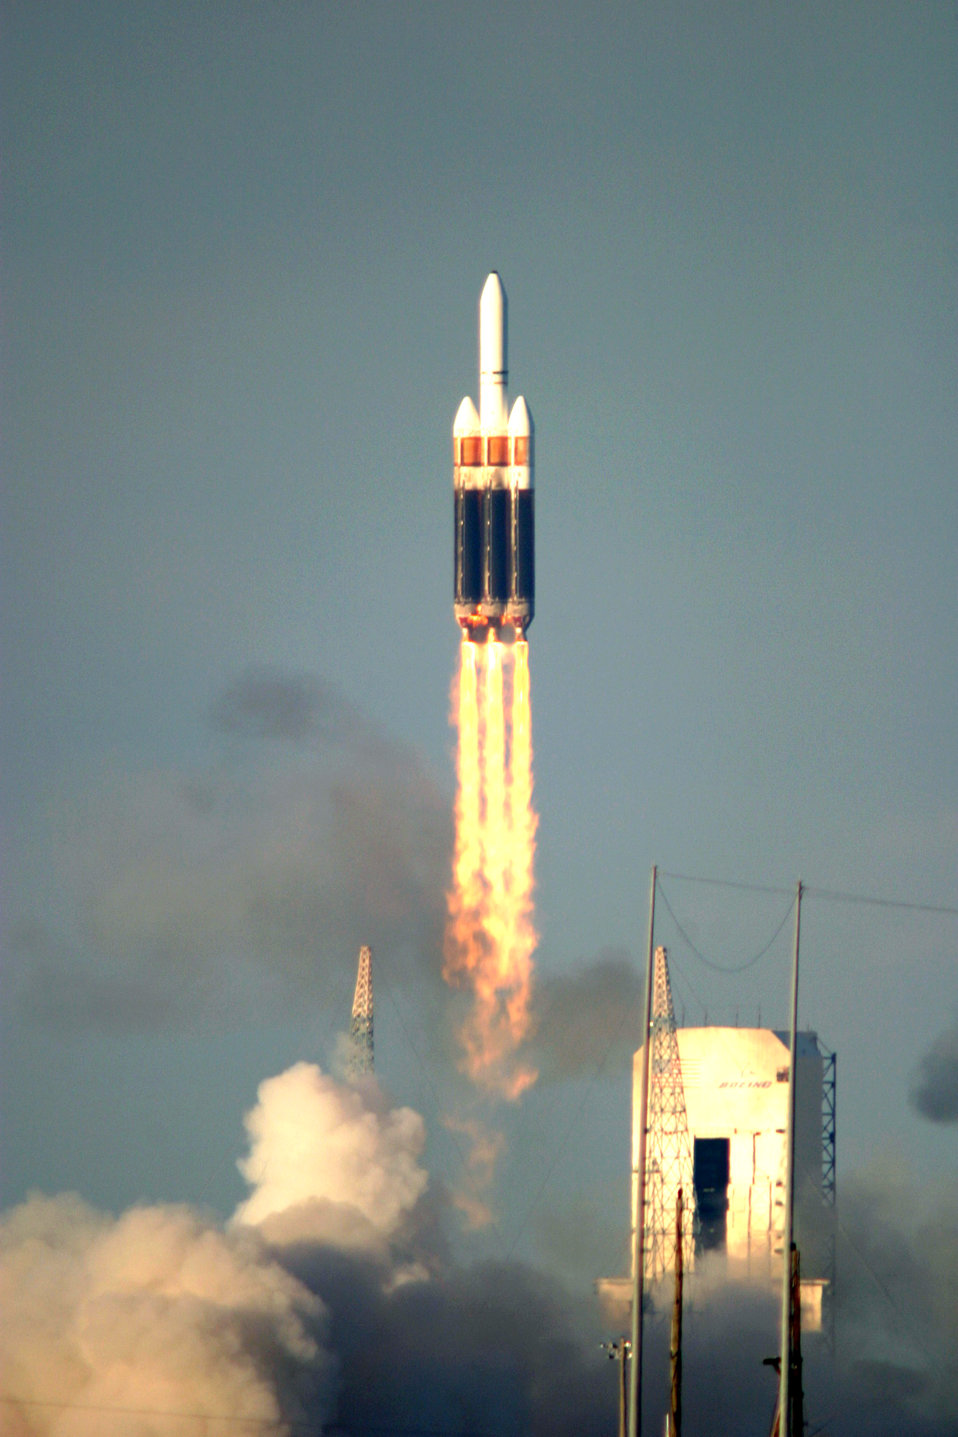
Heavy launch vehicle blasts off

CAPE CANAVERAL AIR FORCE STATION, Fla. -- A Boeing Delta IV heavy launch vehicle lifted off from here on a demonstration mission for the Air Force's evolved expendable launch vehicle program. The mission is to send the satellite into a geosynchronous Earth orbit.